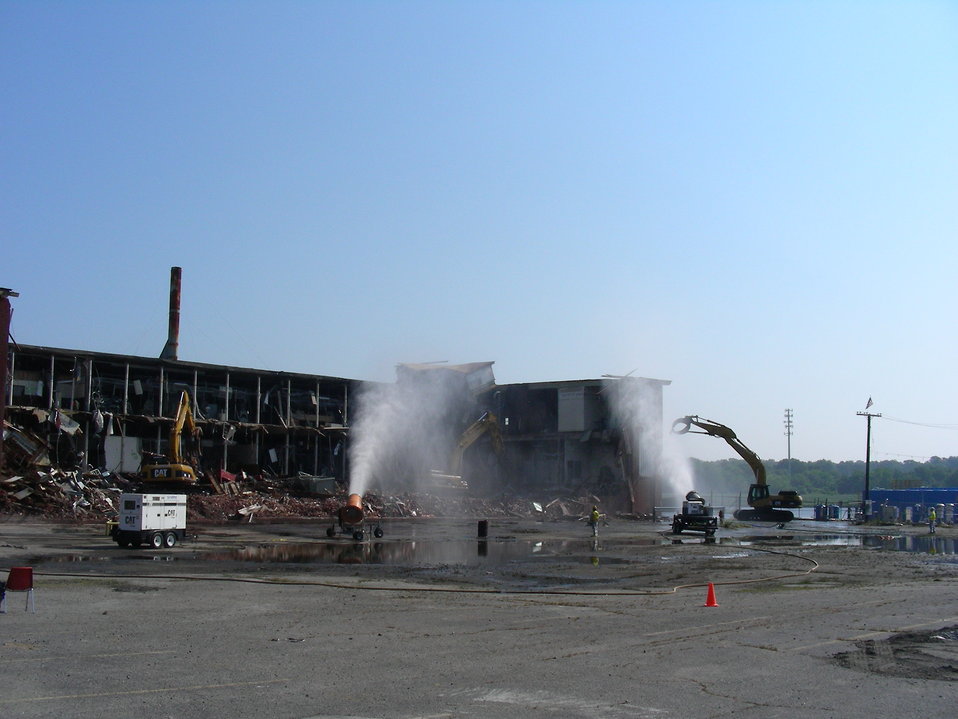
July 22, 2011 Soon to be a water view!

A water view that has been out of sight for decades will soon emerge as new sections of the Aerovox Mill are carefully taken down.

More information is available @ www.epa.gov/nbh/aerovox

Daily project updates available @ twitter.com/#!/EPAaerovox